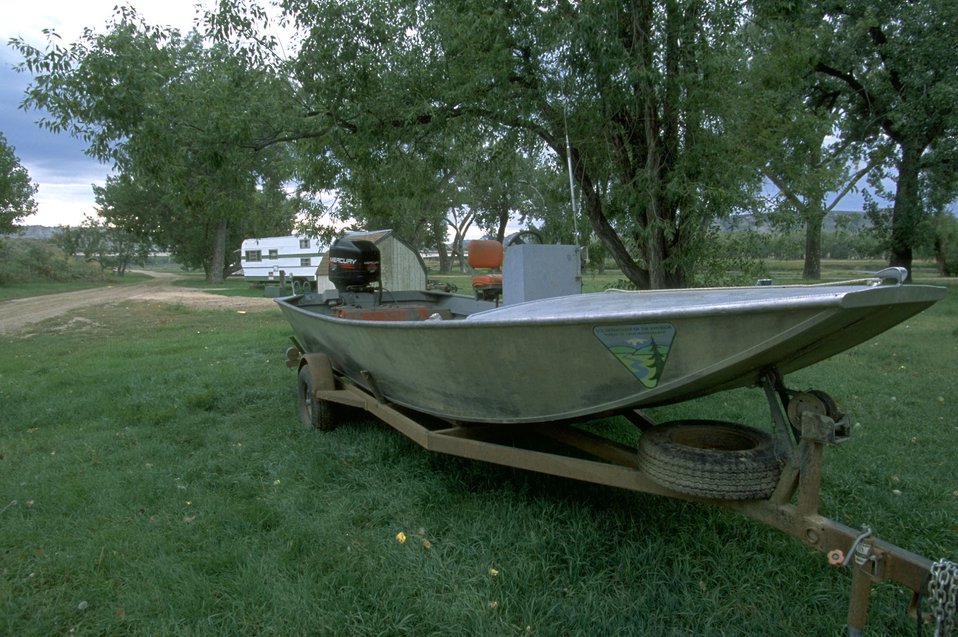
Judith Landing on the Upper Missouri River north of Winifred